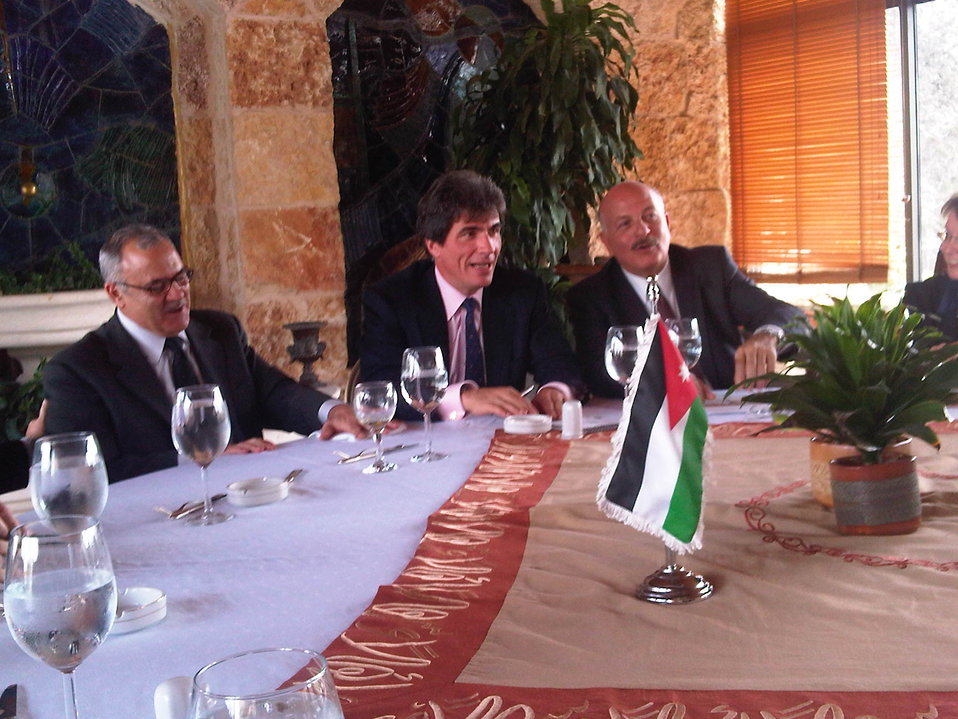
Assistant Secretary Fernandez Meets With AmCham Members in Jordan

Assistant Secretary of State for Economic, Energy and Business Affairs Jose Fernandez meets with members of the American Chamber of Commerce in Amman, Jordan, on October 25, 2011.